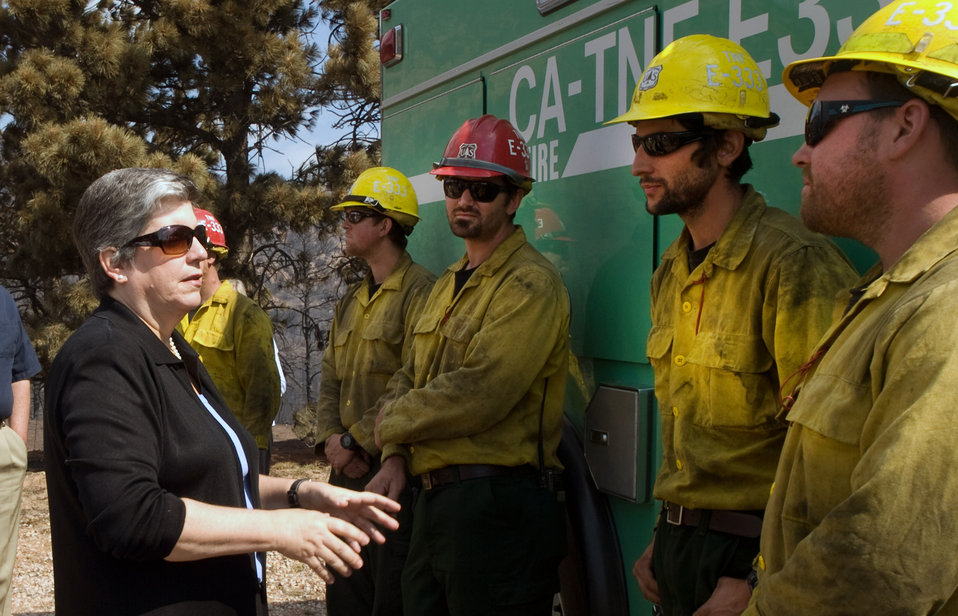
Homeland Security Secretary Janet Napolitano talks with firefighters at the Waldo Canyon near Colorado Springs, CO on Tuesday, July 3, 2012.